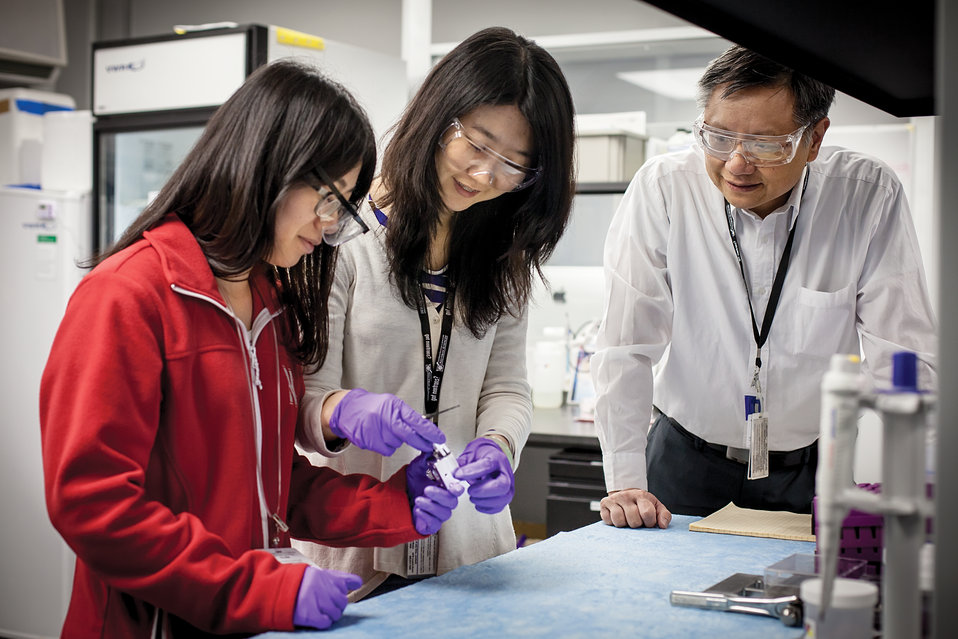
At Oak Ridge National Laboratory, a spallation source user from the University of Connecticut, and students study a lipid nanodisc for drug delivery at BL-6-EQ-SANS.

The Spallation Neutron Source (SNS) is an accelerator based neutron source in Oak Ridge, Tennessee. The SNS provides the most intends pulsed power neutron beams in the world for scientific research and industrial development.